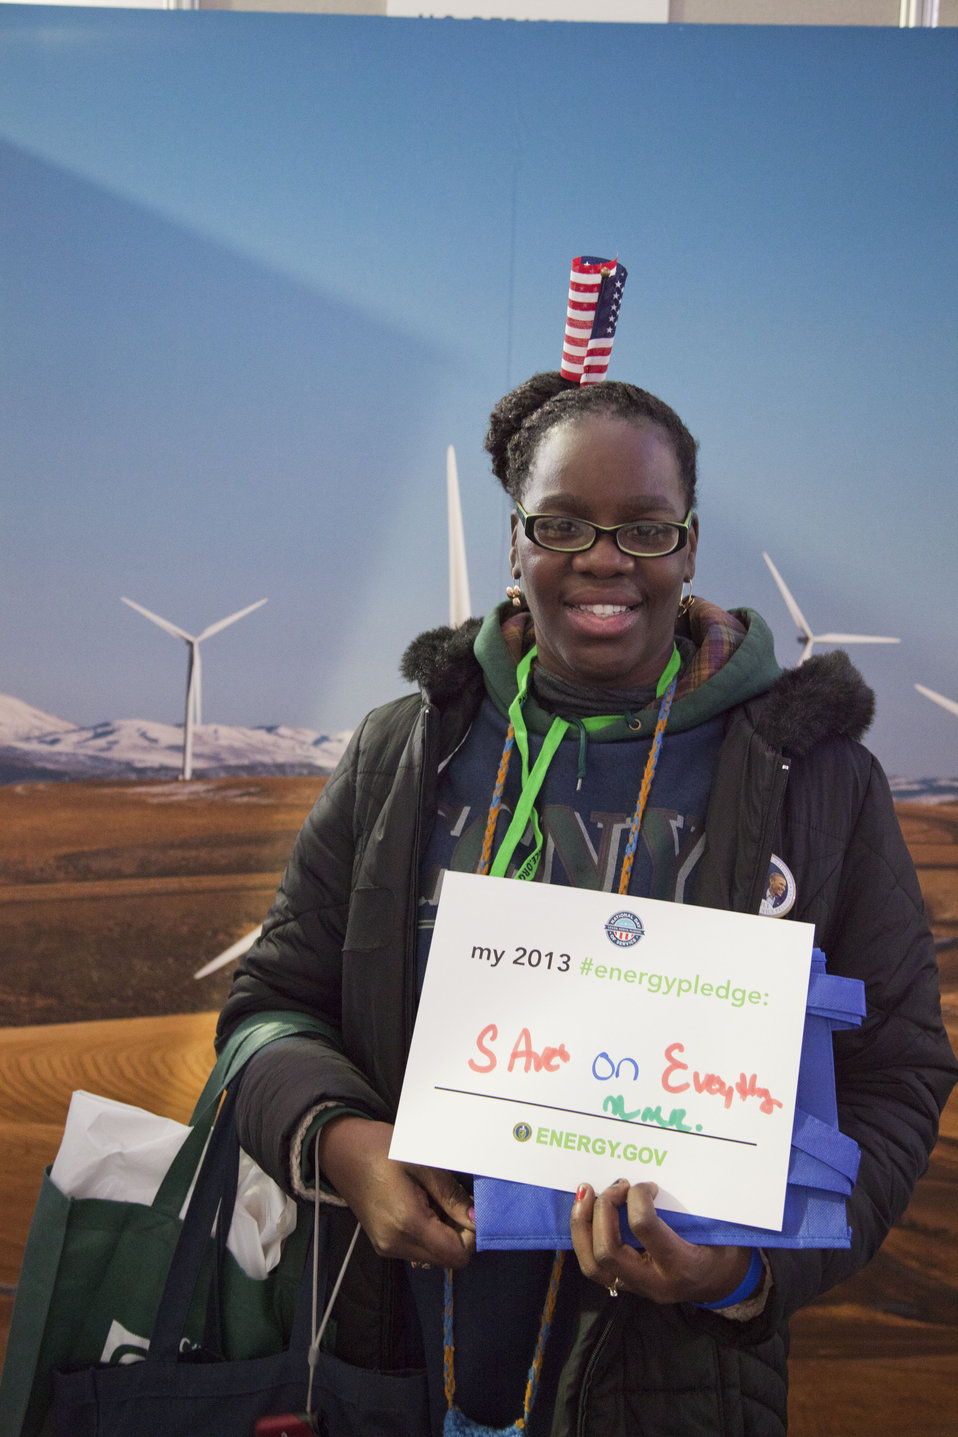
What's your #energypledge?